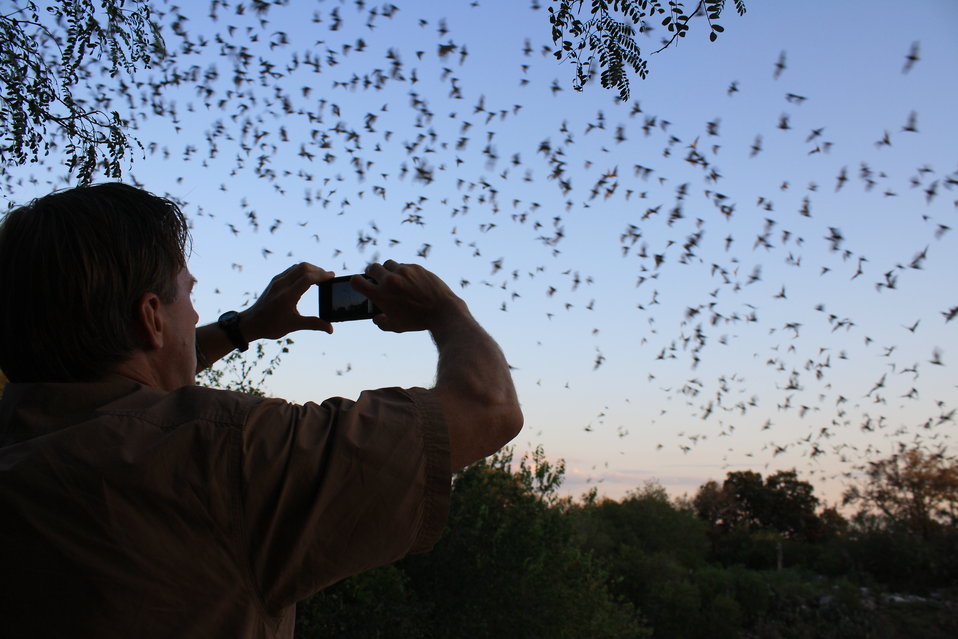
BCI staff takes photo

BCI staff Jim Kennedy takes photo of Mexican free-tailed bats emerging from Bracken Bat Cave